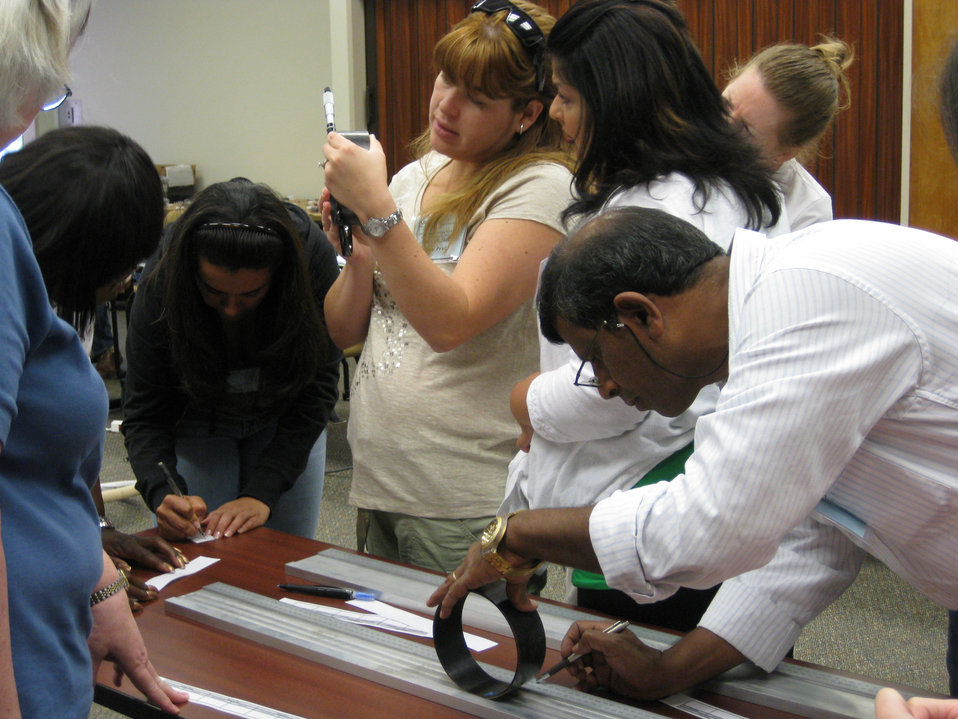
NIST Summer Institute for Middle School Science Teachers

Participants in the NIST Summer Institute for Middle School Science Teachers learn from NIST researchers through lectures, lab visits, and hands-on activities they can recreate in their own classrooms.